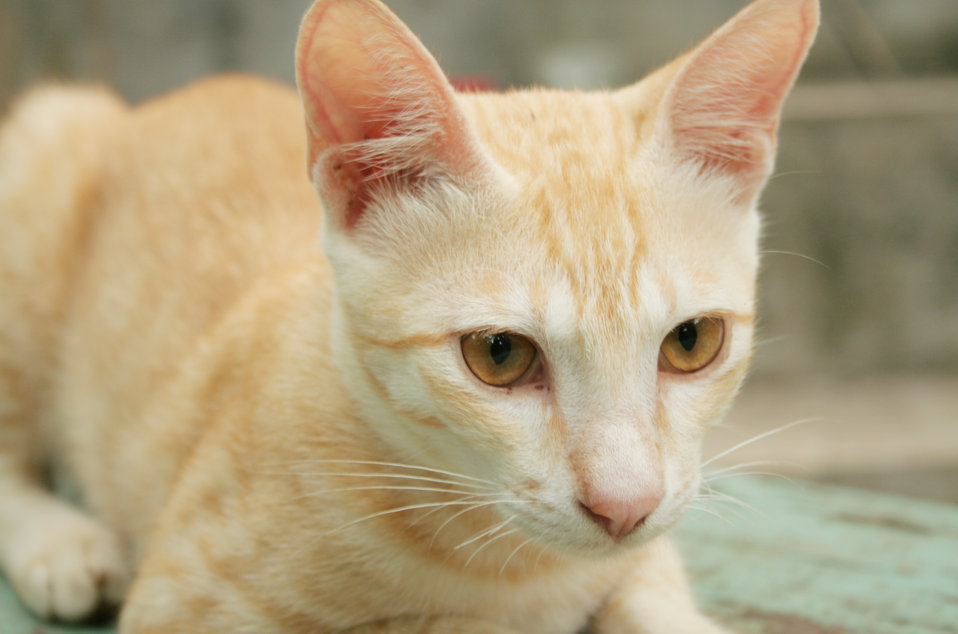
This work is dedicated to Public Domain